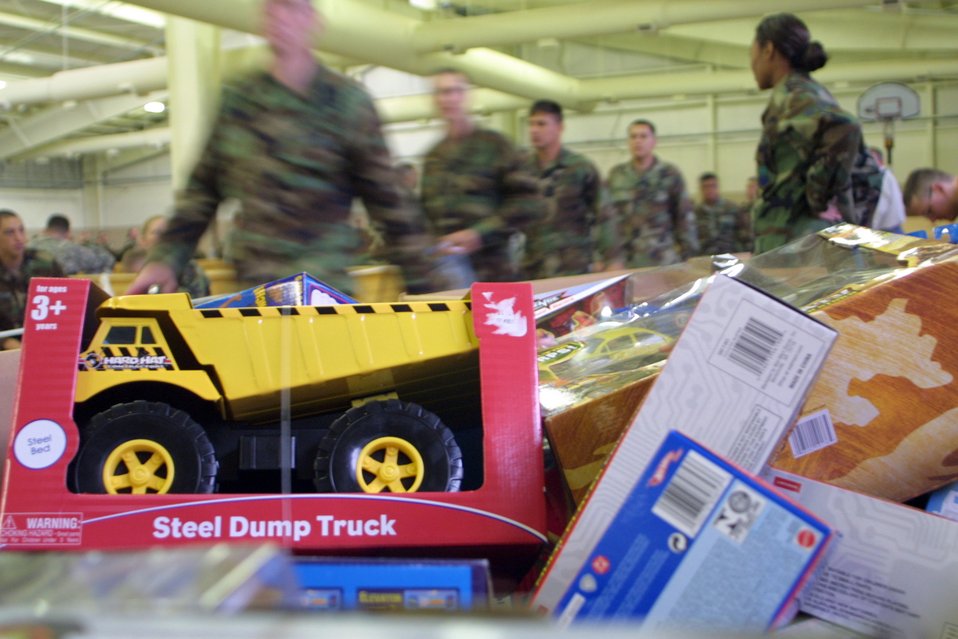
Toy Drop

POPE AIR FORCE BASE, N.C. (AFPN) -- Soldiers hurry through the processing line at Operation Toy Drop. About 3,600 toys were donated to local families in need. In exchange for donations, the Soldiers got to jump with foreign jumpmasters, allowing them to earn either German or Irish jump wings.